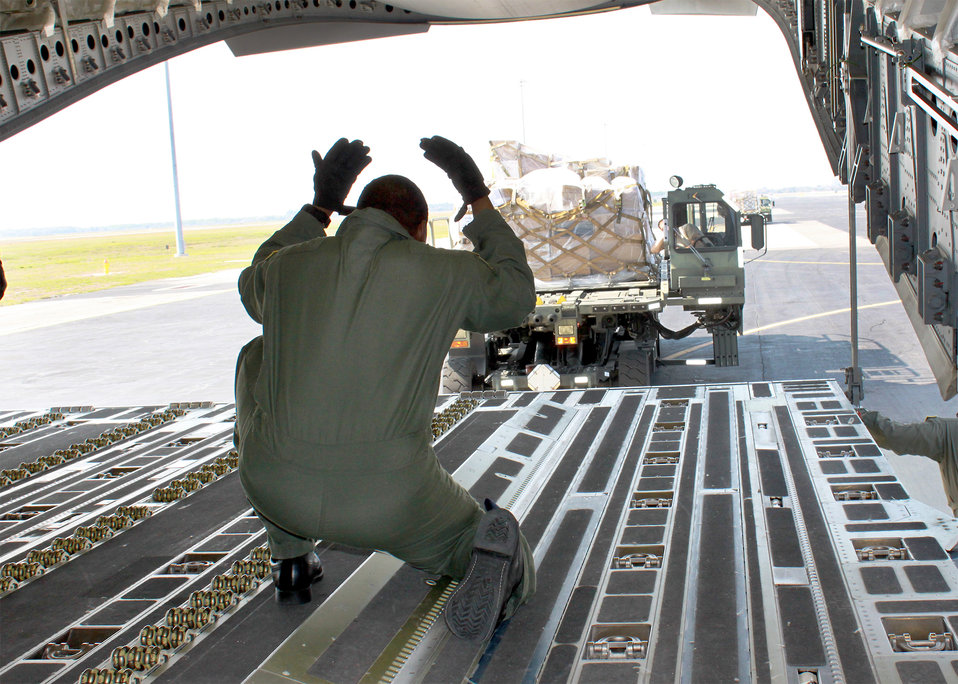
JBMDL humanitarian mission

Tech. Sgt. Sean McClendon directs the positioning of cargo before uploading to the C-17 Globemaster III Feb. 18, 2011, at Joint Base McGuire-Dix-Lakehurst, N.J. The C-17 aircrew accomplished training requirements with stops at three bases to upload and download cargo under the Denton Program intended for delivery to Guyana and Afghanistan. The Denton Program authorizes the Department of Defense to transport donated assistance material, free of charge, on a space-available basis and of no cost to the government other than the cost of transportation itself. Sergeant McClendon is a 732nd Airlift Squadron loadmaster.